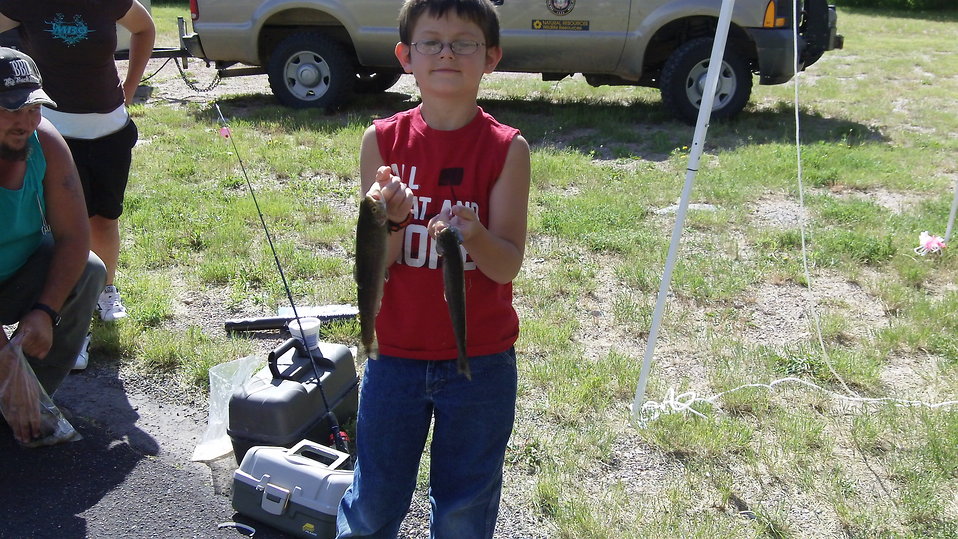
Young Man With His Catch of the Day

On June 11, 2011, Jones Holes National Fish Hatchery held its annual KIDS FREE FISHING DAY. Families came out to enjoy the great outdoors. Everyone had a chance to tour the hatchery, feed fish and hook the 'big' one. Girls and boys learned it is not bad to touch a worm or hold a fish. Project Leader 'Kip Bottomley' was a leader that day in showing children how to catch and release fish. Staff, Travis Anderson and Michelle Pagliasotti also assisted in making the day a fun experience for who attended. UT Division of Wildlife Resources also help in the event.